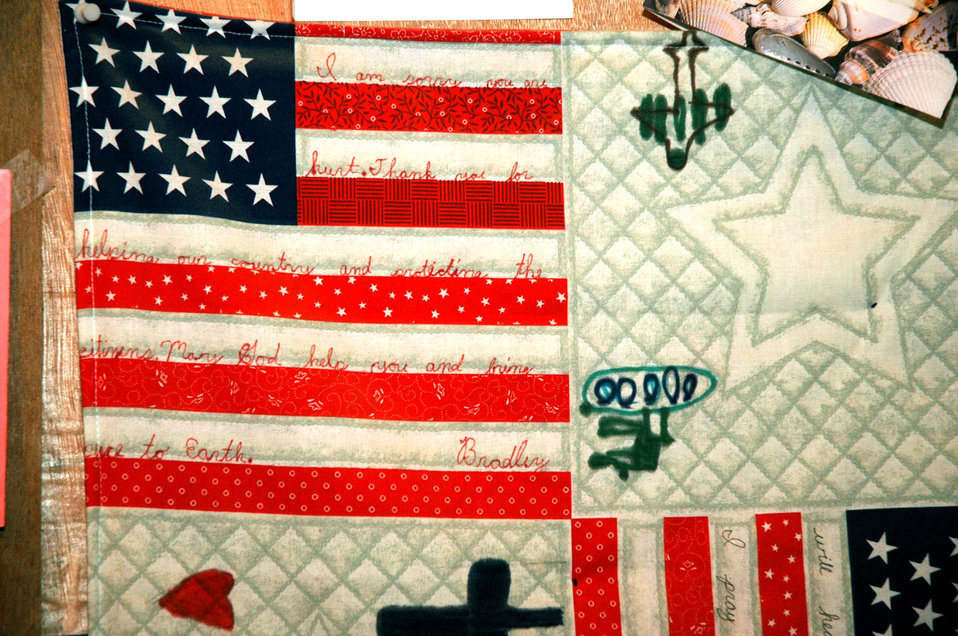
Staging facility takes over where hospital leaves off

BALAD AIR BASE, Iraq -- Cards, letters and homemade projects from people worldwide line the hallways of the 332nd Expeditionary Medical Group's contingency aeromedical staging facility here. The facility provides extended care and prepares patients for transportation to a hospital in Germany where they receive long-term treatment.